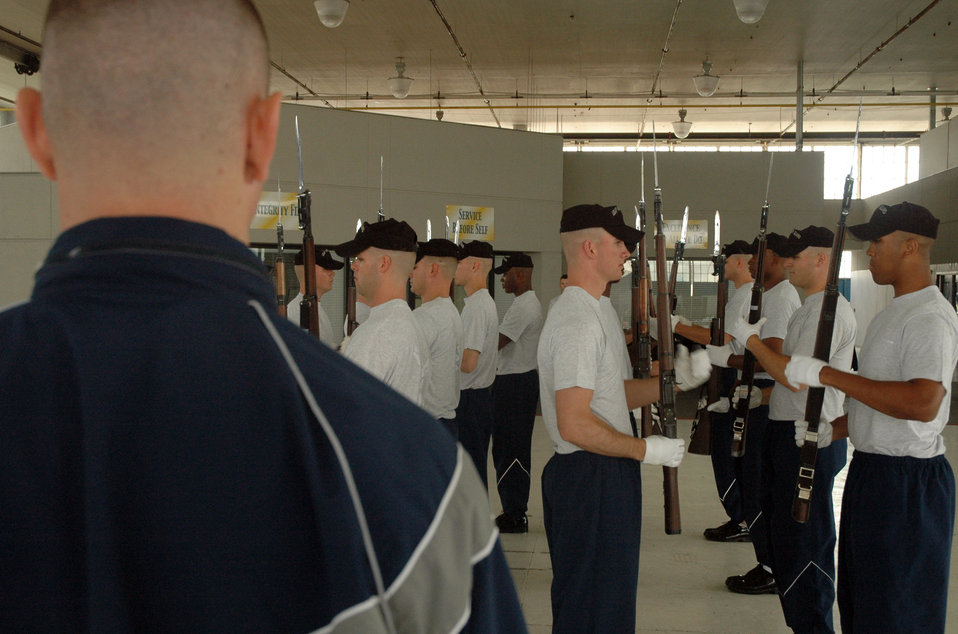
Drill team prepares for upcoming drill season

Capt. Brent Mundie stands on his mark during a practice run of the drill team's new performance March 30 at Maxwell Air Force Base, Ala. The traveling component of the Air Force Honor Guard, the drill team serves as Air Force ambassadors to recruit, retain and inspire Airmen around the globe. Captain Mundie is the Air Force Honor Guard drill team commander.